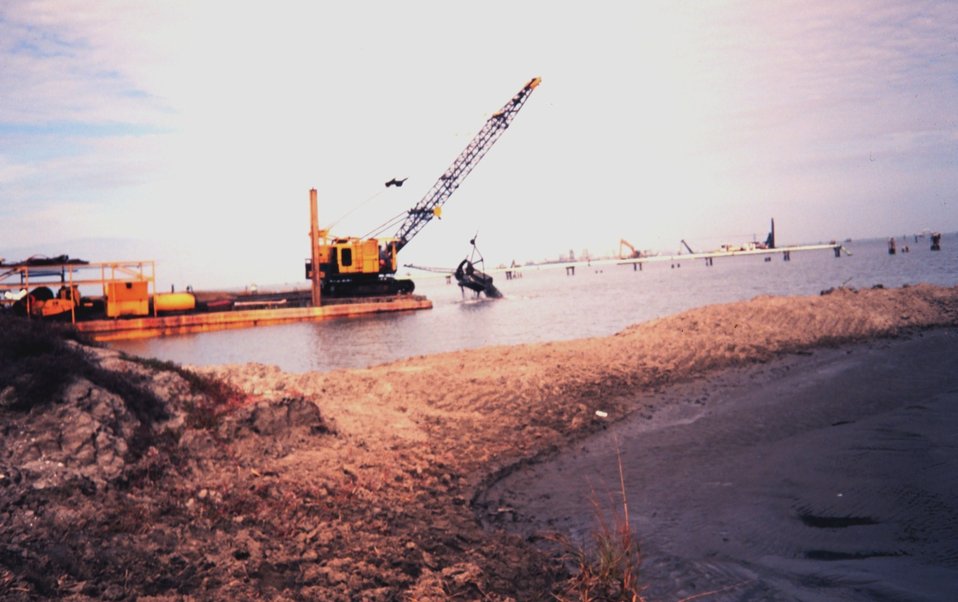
The Greenhill/East Timbalier dredging operation -- bucket dredge scooping material from channel which will be sent by pipe to the marsh creation site.